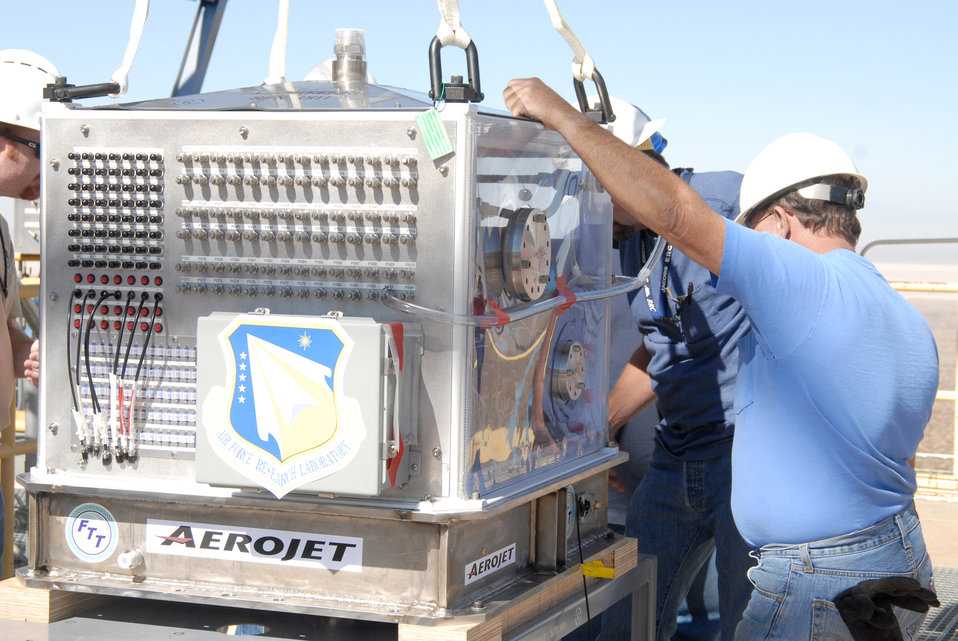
Air Force Research Laboratory officials launch new age in testing

The Upper Stage Engine Technology turbo pump sits in a